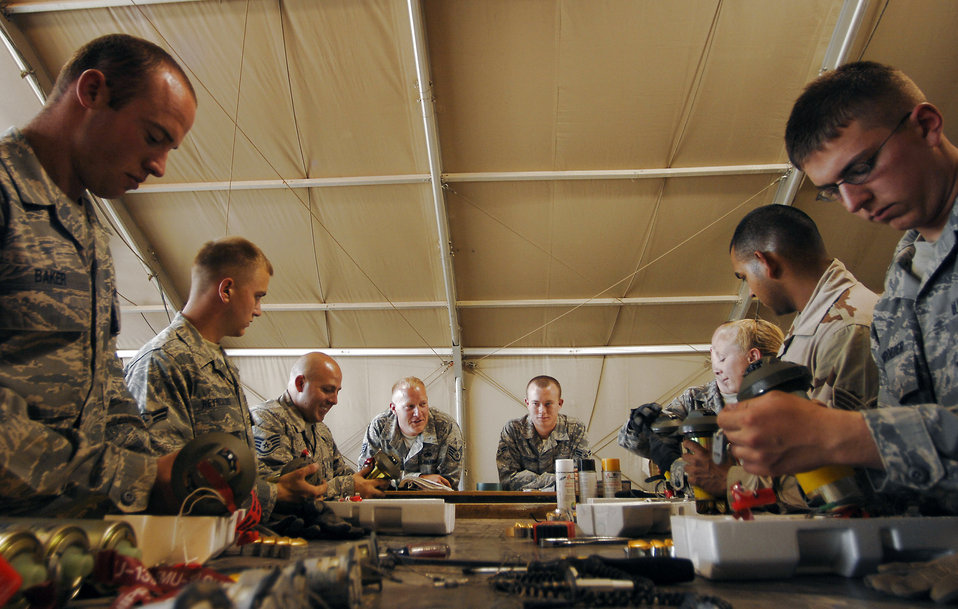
Some assembly required

Munitions systems specialists assigned to the 332nd Expeditionary Maintenance Squadron at Joint Base Balad, Iraq, build fuses for guided bomb unit-12s June 16. The team is responsible for building, maintaining and storing various munitions to support Operation Iraqi Freedom kinetic strikes. The GBU-12 can self-guide to a target pinpointed by a laser designator. Since January, F-16 Fighting Falcons flown by the 332nd Expeditionary Operations Group have engaged in more than 315 kinetic strikes.